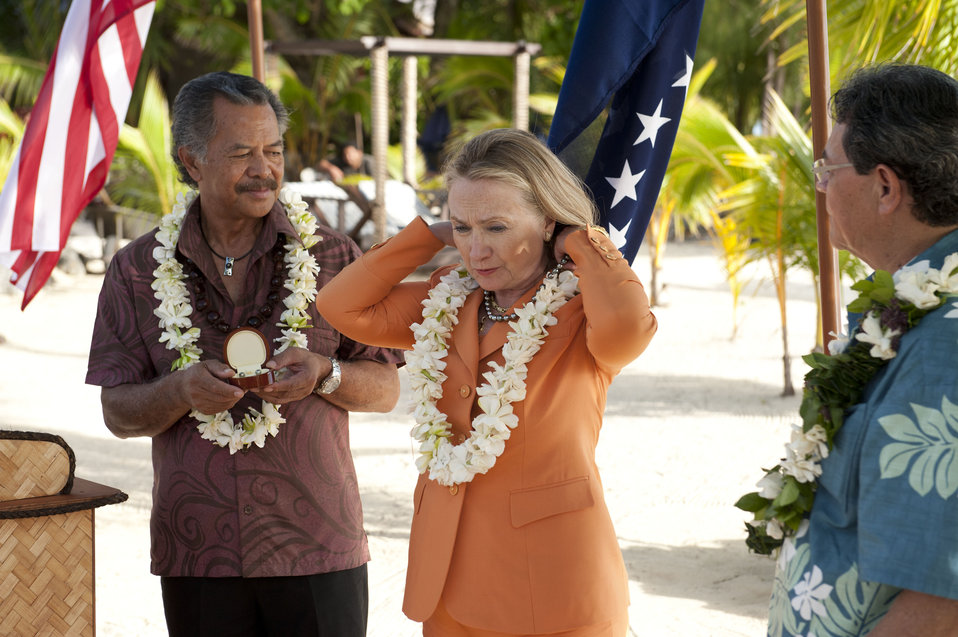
Sustainable Development and Conservation Event in the Cook Islands

Prime Minister Henry Puna of the Cook Islands, and George Ellis, CEO of the Cook Islands Pearls Authority, watch as U.S. Secretary of State Hillary Rodham Clinton dons a black pearl necklace during a Sustainable Development and Conservation event in Rarotonga, Cook Islands, August 31, 2012.